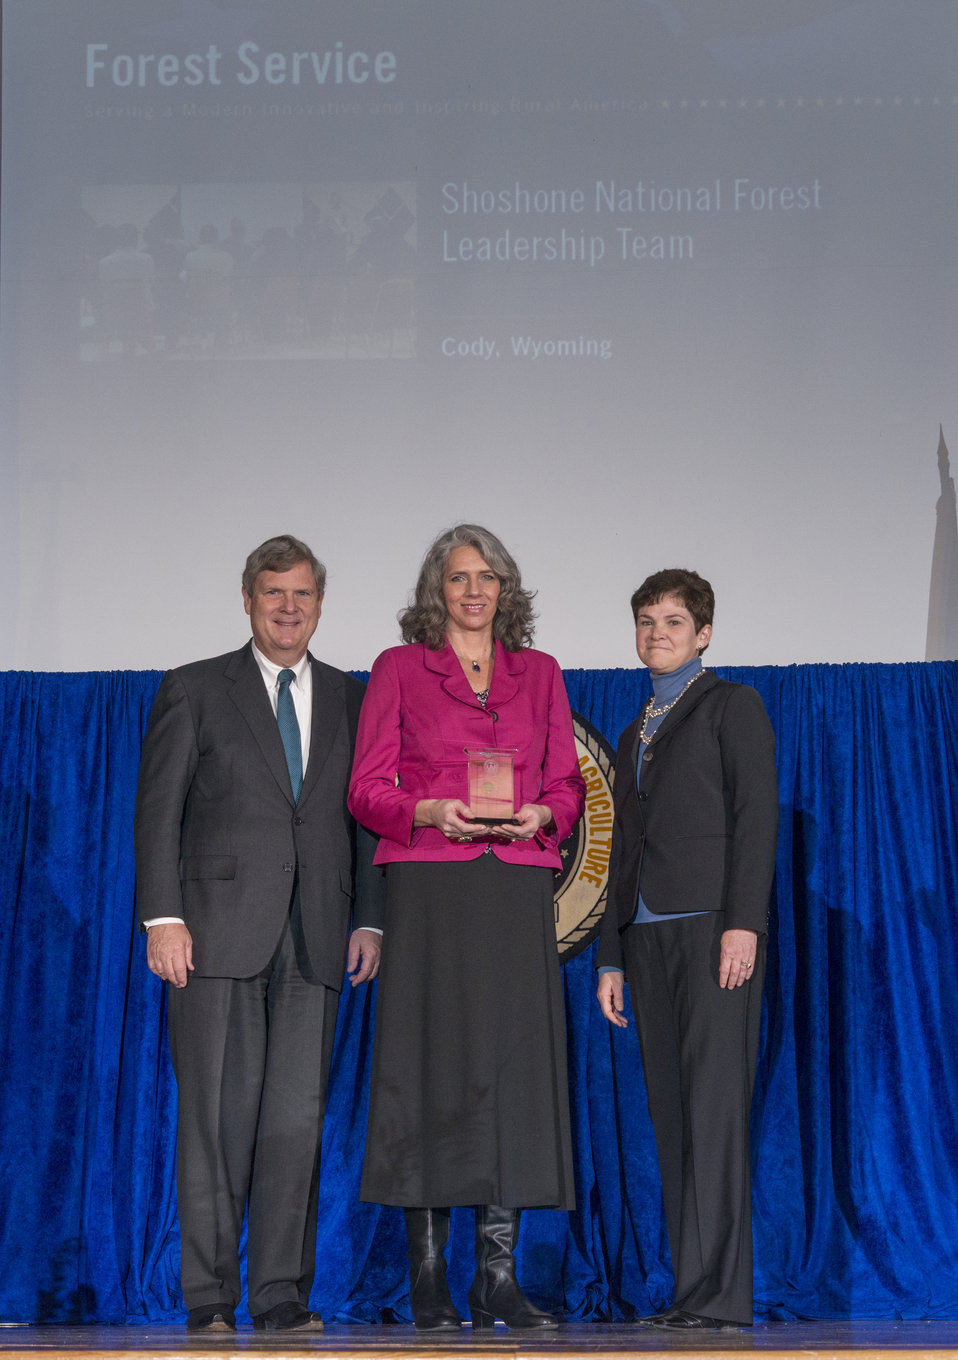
Agriculture Secretary Tom Vilsack and Agriculture Deputy Secretary Krysta Harden present the Secretary’s Honor Award to Shoshone National Forest Leadership Team Forest Service in Cody, WY Group leader Joseph Alexander (accepting Veronica Klukas) for efforts to cultivate a more diverse and inclusive work environment at the 2013 Secretary's Honor Awards in the Jefferson Auditorium at the U.S. Department of Agriculture (USDA) in Washington, D.C. on Wednesday, Dec. 11, 2013.